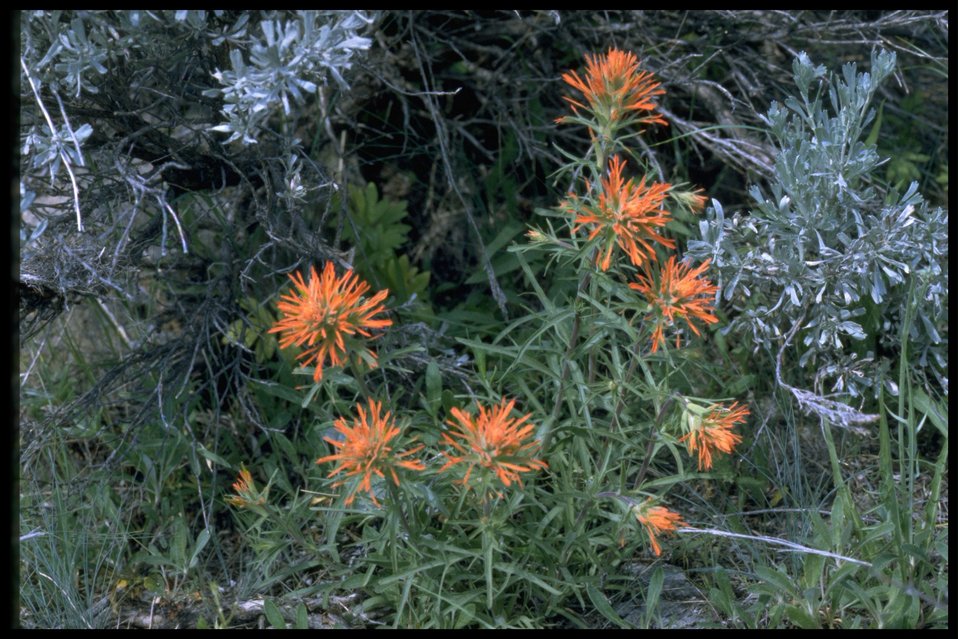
Medium shot of Indian Paintbrush wildflowers and Wyoming Sagebrush .